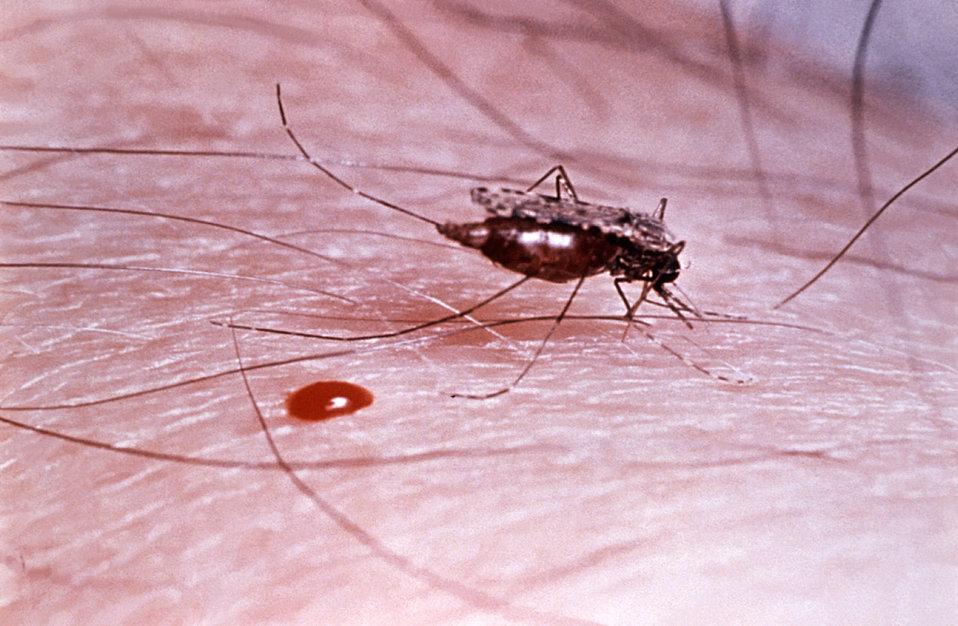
This is an Anopheles gambiae mosquito, which is a known vector for the malarial parasite.